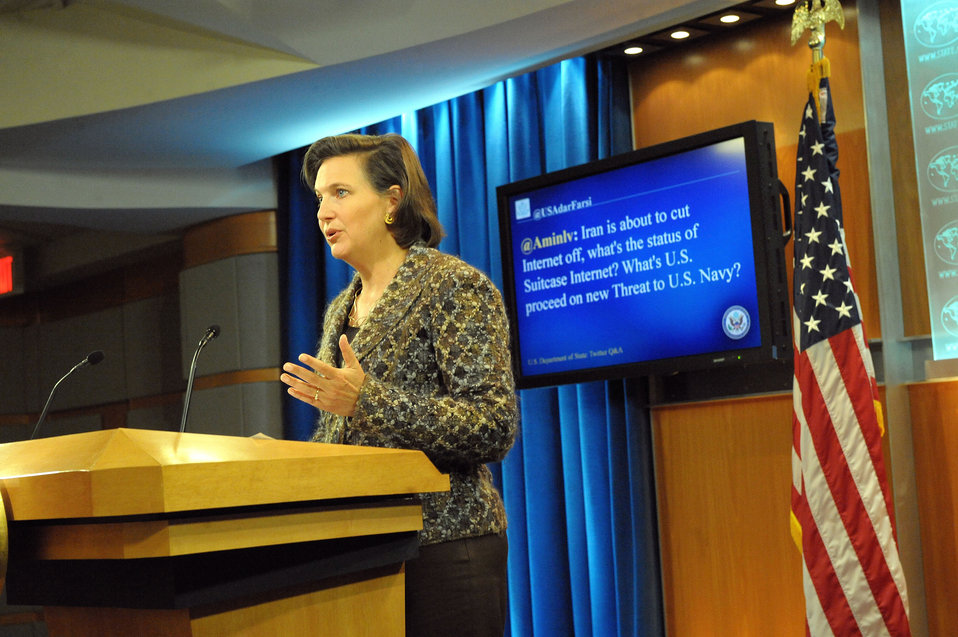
Spokesperson Nuland Responds to a Question from @USAdarFarsi

Victoria Nuland, Spokesperson for the U.S. Department of State, answers a question selected from the Department’s official Farsi Twitter feed, @USAdarFarsi, on January 6, 2012.